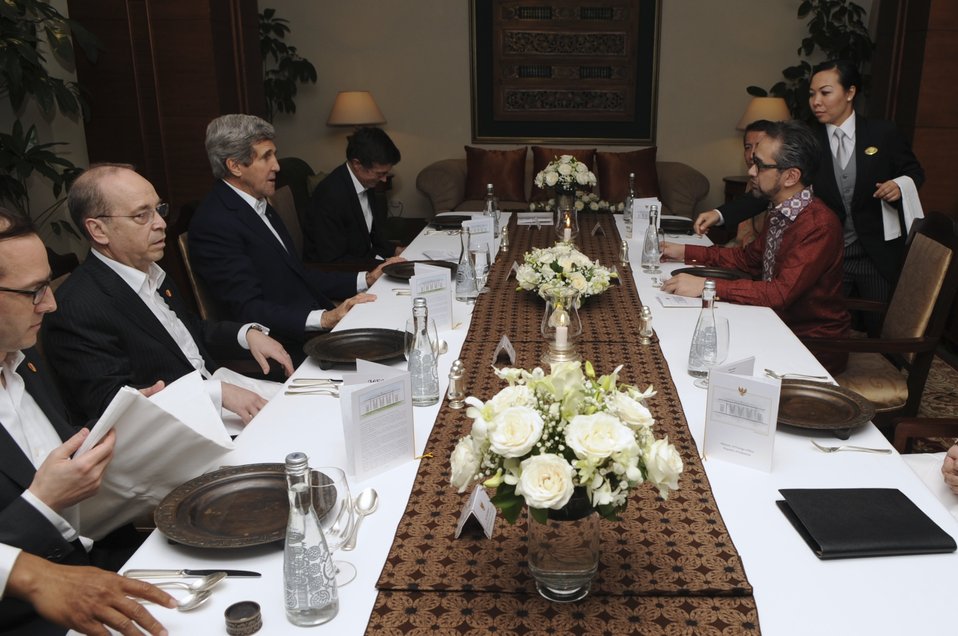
Secretary Kerry Meets Indonesian Foreign Minister Natalegawa in Jakarta

U.S. Secretary of State John Kerry and Indonesian Foreign Minister Marty Natalegawa sit down for a dinner meeting in Jakarta, Indonesia, on February 16, 2014.